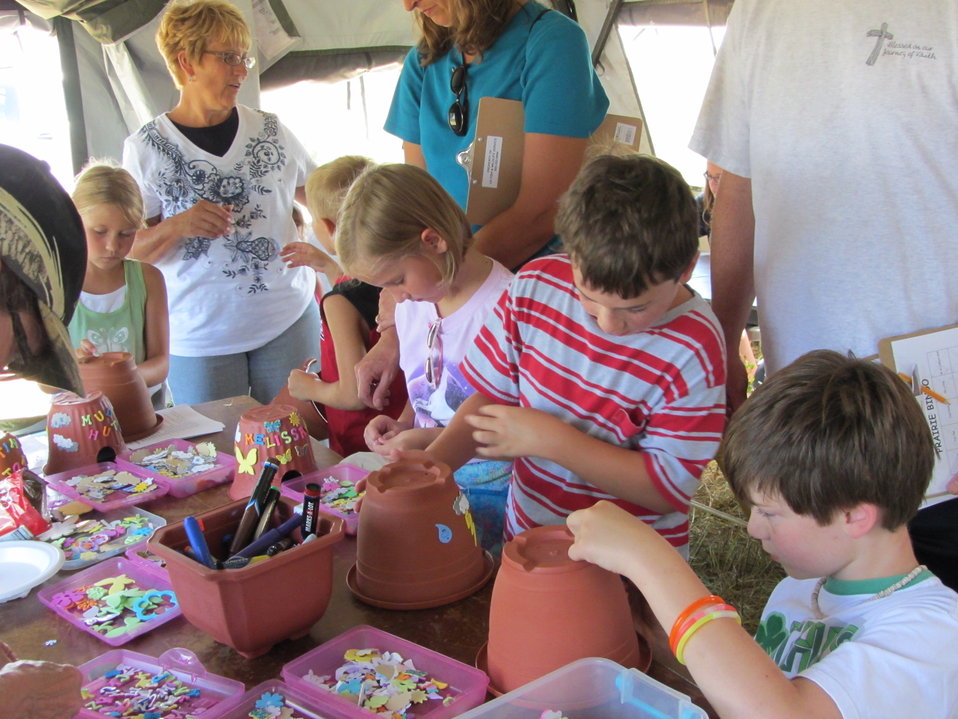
2011 Huron Prairie Fest